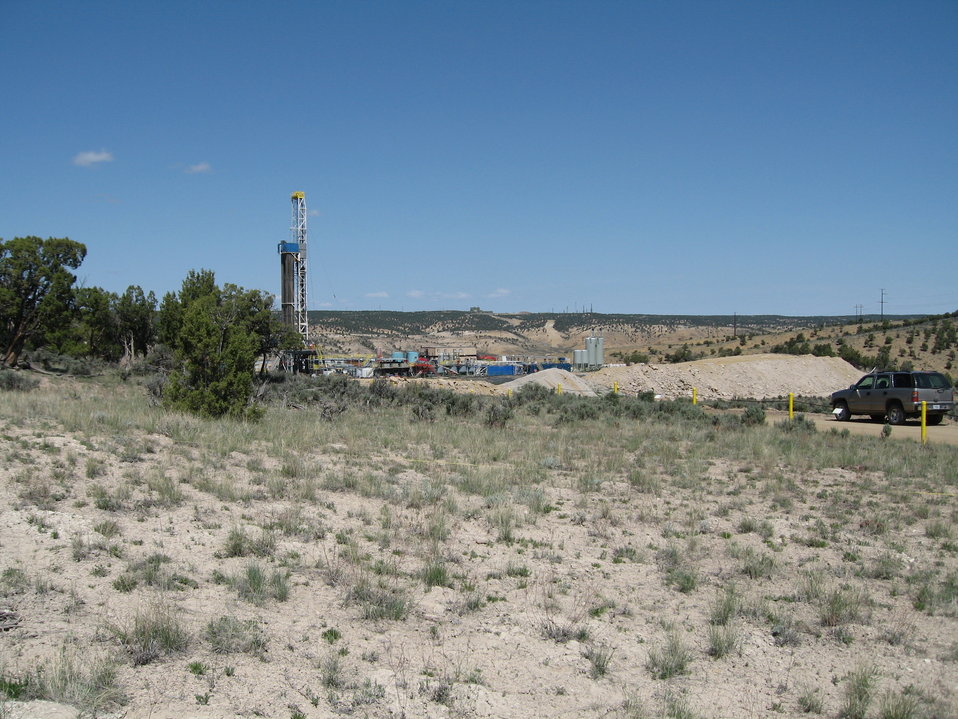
Dudley Bluffs bladderpod and twinpod grow on barren white shale soils in Rio Blanco and Garfield counties, CO as pictured in the foreground of this photo. This rare and distinctive habitat is threatened by natural gas exploration and extraction in the region.

Photo credit: USFWS

...........................................................................

BACKGROUND:

Dudley Bluffs bladderpod (Physaria congesta) and the Dudley Bluffs twinpod (Physaria obcordata)

The Dudley Bluffs bladderpod (bladderpod - Physaria congesta) and the Dudley Bluffs twinpod (twinpod - Physaria obcordata) are limited or endemic to barren white shale outcrops and specific soil tongues in the Piceance Basin of Rio Blanco County, Colorado. The bladderpod is known from eight populations, consisting of roughly 546,000 plants across an estimated 930 acres, while the twinpod is known from 11 populations, consisting of roughly 25,000 plants across an estimated 318 acres. Approximately 88% of the total occupied bladderpod and twinpod habitat occurs on public lands managed by the Bureau of Land Management. All known populations occur within a 20 square mile area.

When these two species were listed in 1990, natural gas drilling was not considered a threat. Previously considered inaccessible, these two species sit atop the nation’s biggest reservoir of natural gas. Fracturing technique advancements, however, have recently made these natural gas deposits accessible with 95 percent of the development near these rare plant populations. Rio Blanco County currently has over 2,600 natural gas wells, but predictions estimate there may be as many as 19,000 wells within 15 years, more than any other Colorado county. These wells and their associated infrastructure (pads, pipelines, roads, and traffic) are impacting populations and habitat of both the bladderpod and the twinpod. The Bureau of Land Management, the Colorado Natural Areas Program, the U.S. Fish and Wildlife Service (Service), and other partners have been working together to better document and study these impacts to the bladderpod and the twinpod.

Oftentimes management for rare plant species does not adequately consider impacts outside of the immediate area where a plant is found. For example, ecological effects from dust generated by heavy traffic on dirt or gravel roads can extend more than 300 feet from the road. Or, for every vehicle traveling one mile of unpaved roadway once a day, every day for a year, 2.5 tons of dust can be deposited. Effects to plants from dust can be numerous, including changes to a plant’s photosynthesis, respiration, transpiration, water use efficiency, leaf conductance, growth rate, plant vigor, and gas exchange rates. Changes to plant communities and species’ abundances within these communities have also been linked to dust deposition. Aside from dust, roads themselves alter ecosystems by importing invasive nonnative species, altering hydrology, and changing sedimentation patterns. In addition, both the twinpod and the bladderpod require pollinators for reproduction. Impacts to these solitary ground or twig nesting bees (especially their nesting habitats) may impact these species’ reproduction. We consider all of these effects to be part of “dispersed development” impacts. Our research hopes to address impacts to these two species, their associated plant communities and their pollinators. We are hopeful this research will allow land managers to better evaluate and address threats from this dispersed development.